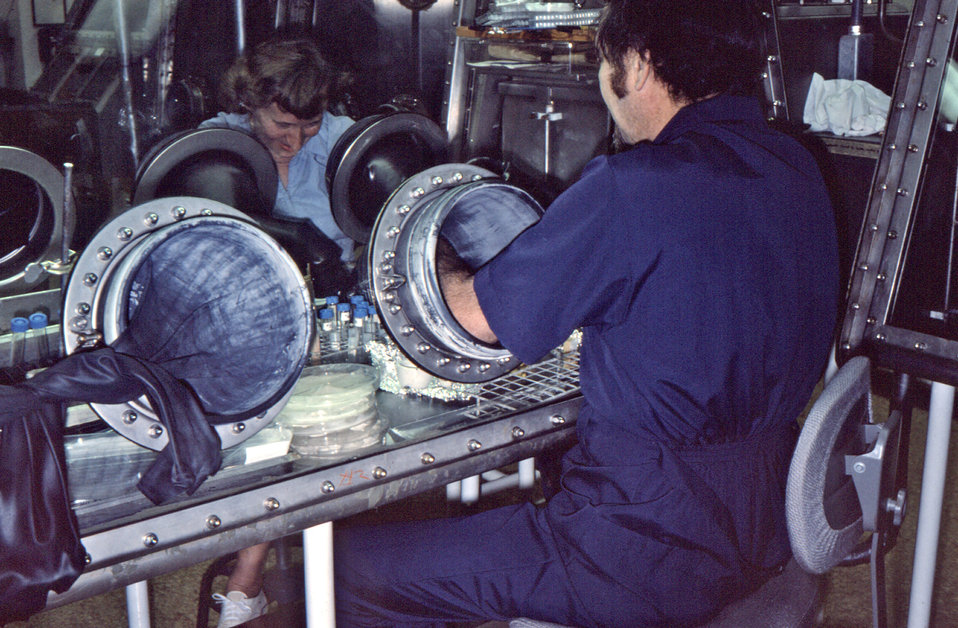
This photograph shows CDC virologists Herta Wulff, Ph.D. (left), and Karl M. Johnson, M.D., working with specimens through the sealed portals of a 'glove box' during a 1975 Marburg vector investigation.